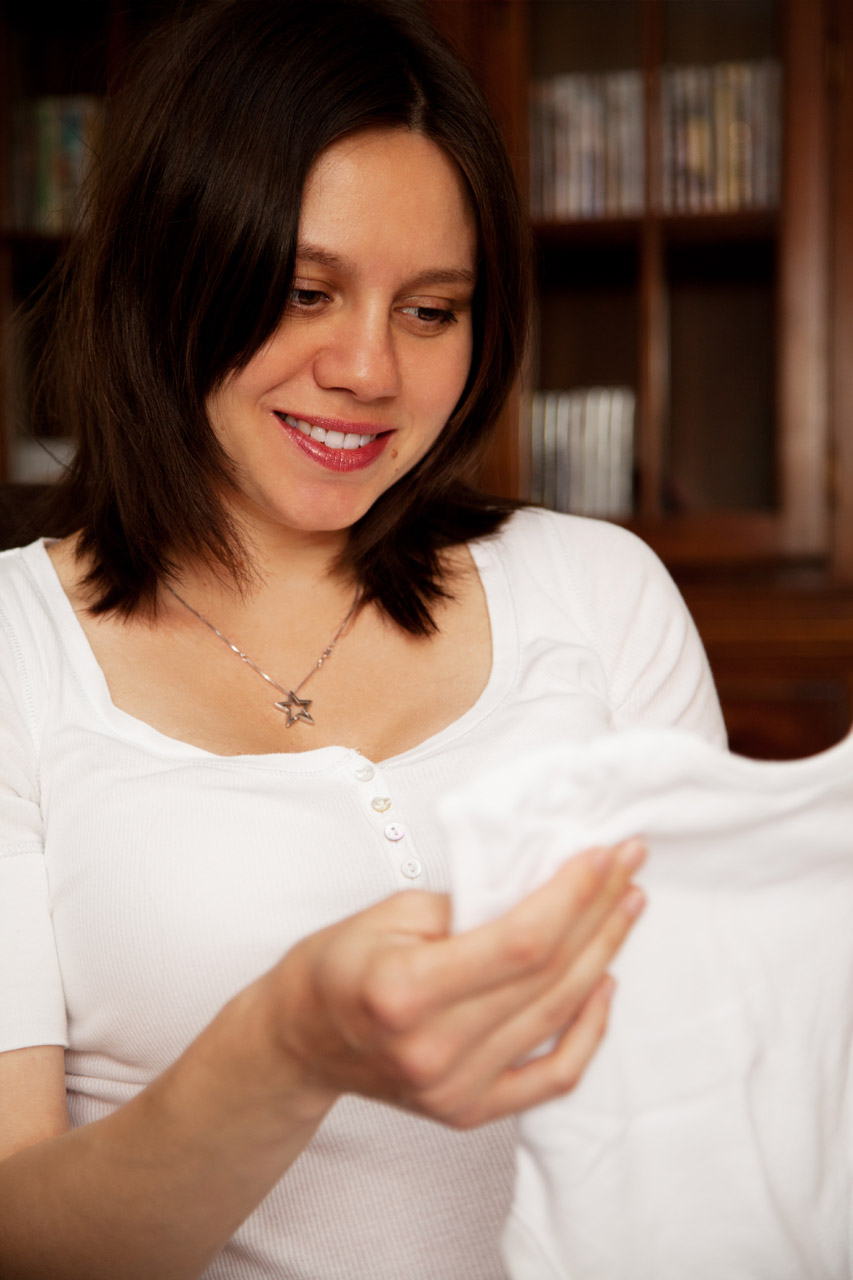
Woman and baby bodysuit

Young woman looking at white baby bodysuit.